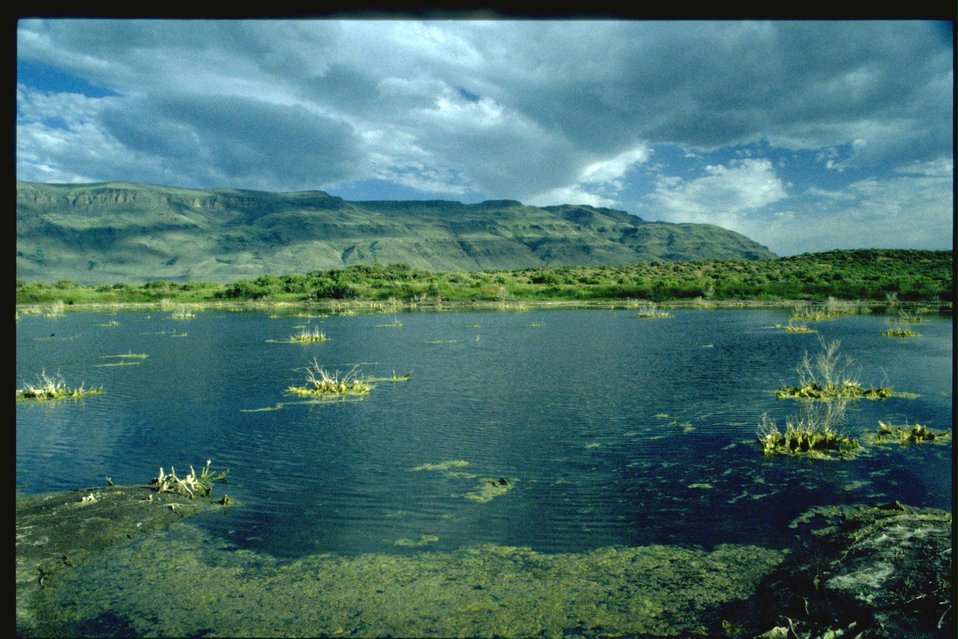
Flagstaff lake, Warner Wetlands.